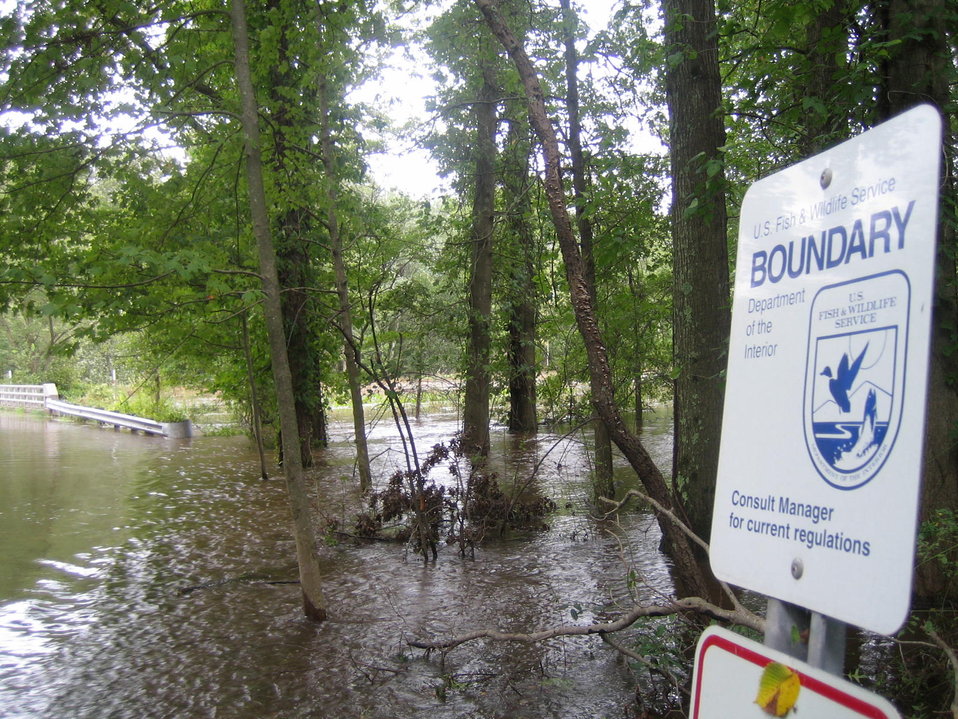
Flooded road at Great Swamp

Flooded road from Hurricane Irene at Great Swamp National Wildlife Refuge in New Jersey.